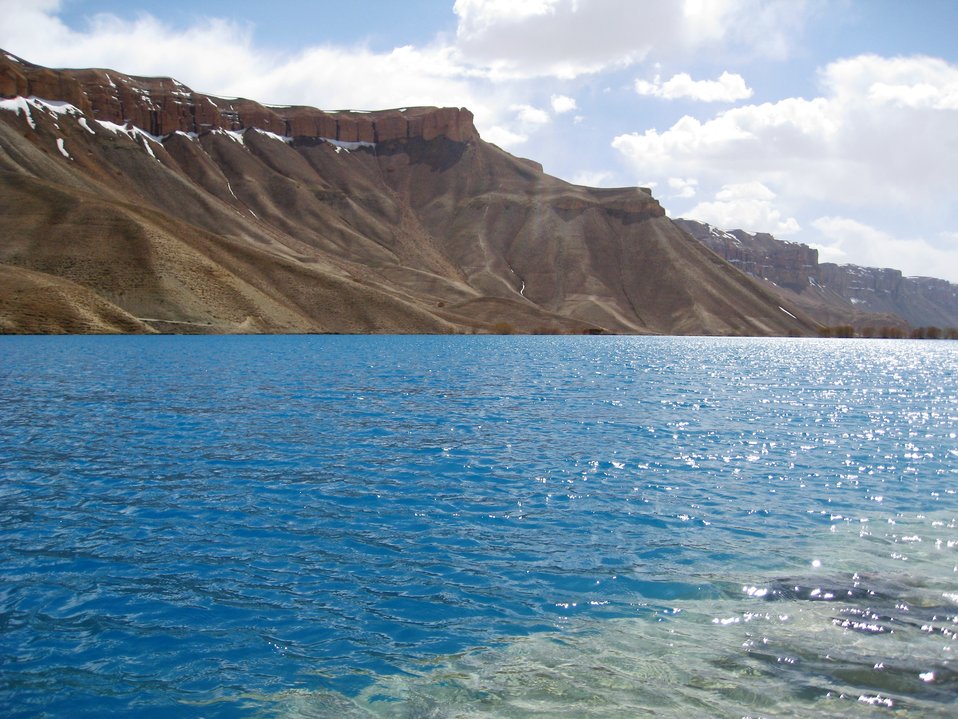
bamiyan 042908-nc 131

The beauty of the area’s six cobalt-blue Band-e-Amir lakes always stuns visitors to central Bamyan province. Natural travertine dams, created by calcium deposits over many years, support the lakes. They stretch across the valley in long graceful arcs, and merge into a strikingly beautiful landscape of stone, desert, and water. The vistas rival those of national parks anywhere in the world.
USAID, through its implementing partner the Wildlife Conservation Society (“WCS”), has been working since 2006 to develop the institutions and foster the consensus needed for the formation of a national park in the lakes area. The efforts ultimately resulted in the Earth Day declaration in 2009, of Band-e-Amir as Afghanistan’s first national park by the Director General of Afghanistan’s National Environmental Protection Agency (NEPA).
Afghanistan’s Environment Law requires local management of protected areas. To fulfill that mandate, WCS initially educated the residents in the 13 villages located within the territory of the park about the economic opportunities that national park status would provide. The Band-e-Amir Protected Area Committee (BAPAC) recruited villagers to be members. BAPAC and WCS jointly prepared a management plan for the park, and WCS assisted local officials in successfully navigating the national park proposal process.
With USAID support, WCS is now training rangers to protect the flora and fauna in the park, and is educating the provincial and national government officials who must manage park operations and ensure sustainability. WCS continues to help the government develop laws and policies on protected areas and species, and community-based natural resource management.
In anticipation of national park status, local entrepreneurs had already begun building small shops, restaurants, and hotels to serve tourists. USAID-funded partners provided guidance to help them place these structures away from the most ecologically sensitive areas. Now that the park has achieved official status and protection, the local people will have the opportunity to protect, preserve, and profit from this beautiful landscape.